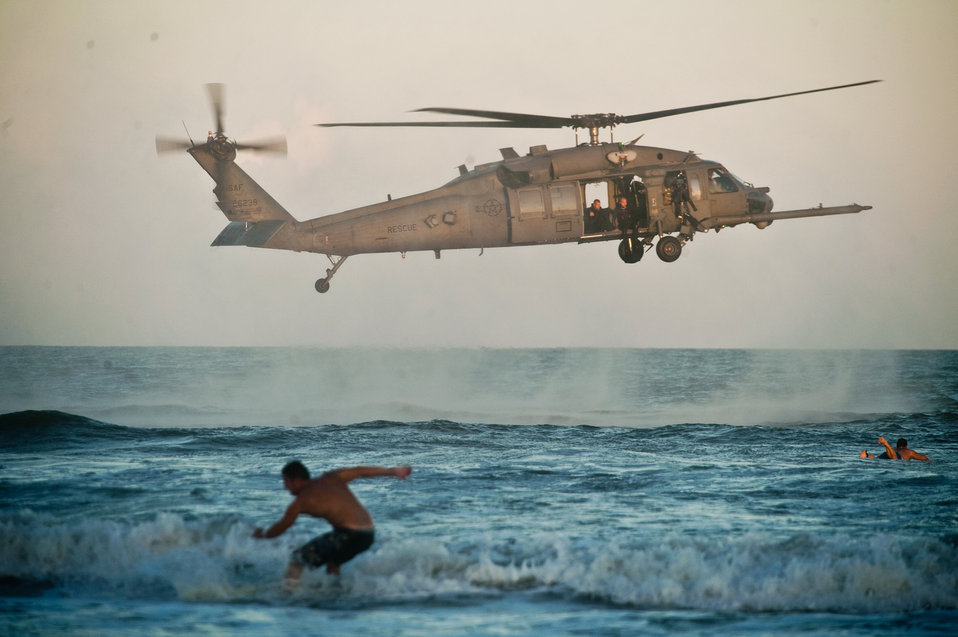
Pararescuemen demonstrate their skills during Air Force Week

Surfer catch the waves as pararescuemen in an HH-60G Pave Hawk prepare to descend to the water during a rescue demonstration Oct. 27, 2010, at Cocoa Beach, Fla. The demonstration was part of Air Force Week Cocoa Beach. The pararescuemen are from the Air Force Reserve Command’s 920th Rescue Wing at Patrick Air Force Base, Fla.